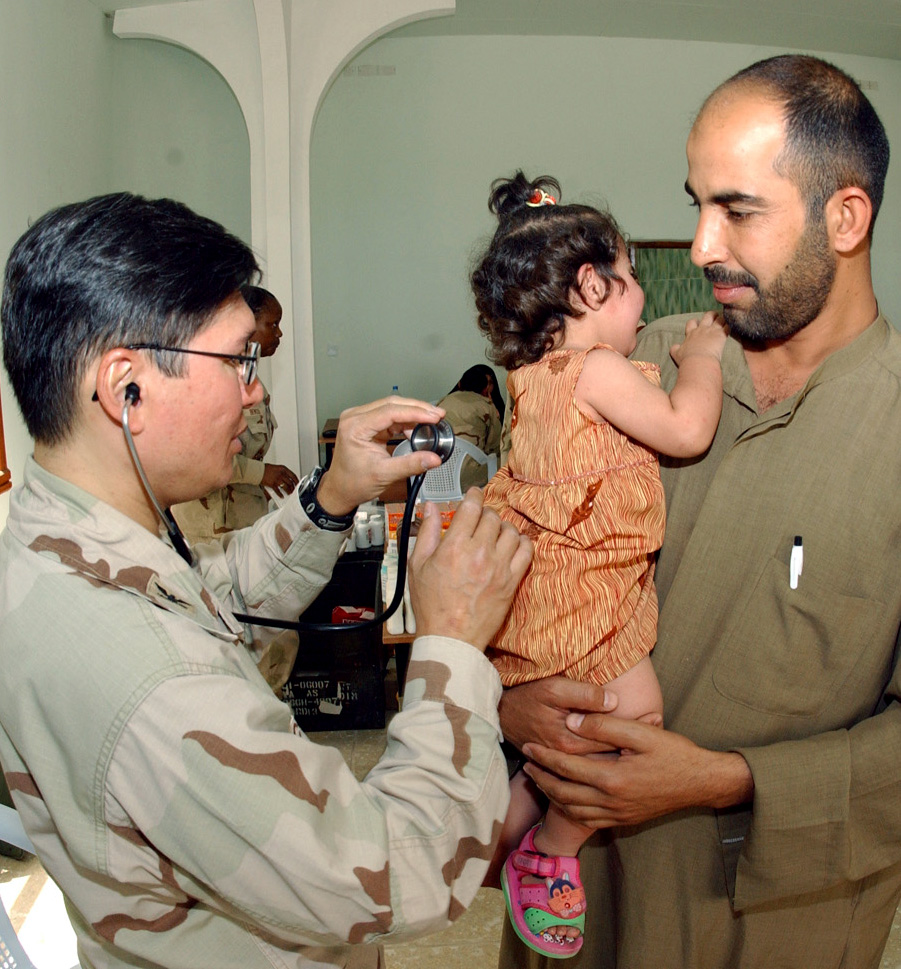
Operation Iraqi Freedom

BALAD AIR BASE, Iraq (AFPN) -- Col. (Dr.) John Cinco checks an Iraqi girl during a medical civic-action project visit. A small contingent of Air Force medical people treated local villagers for minor illnesses and injuries. Dr. Cinco is the 332nd Contingency Aeromedical Staging Facility chief flight surgeon here, and is deployed from the 43rd Medical Group at Pope Air Force Base, N.C.